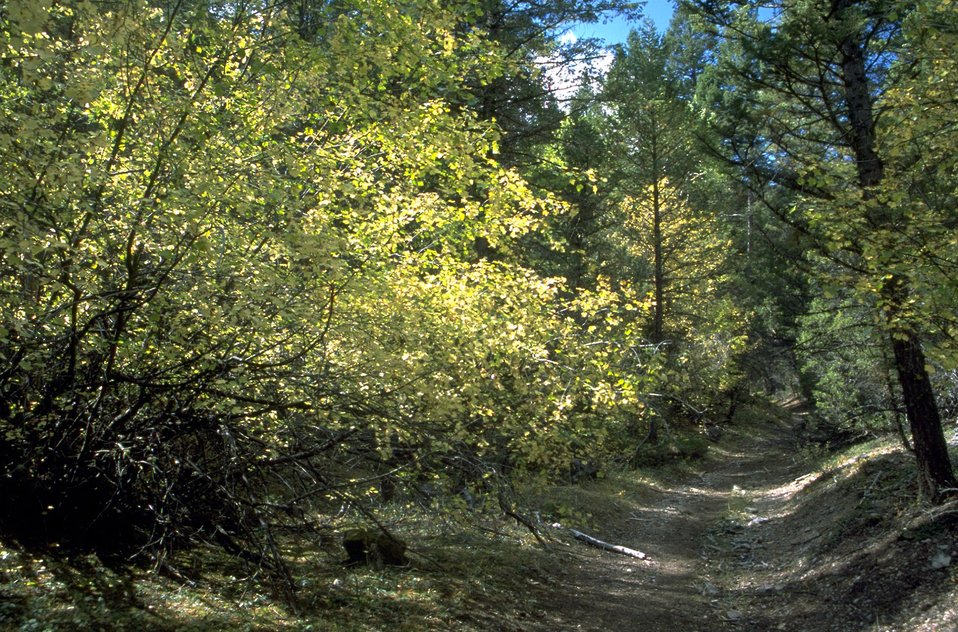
Roadbed in the Centennial Mountains